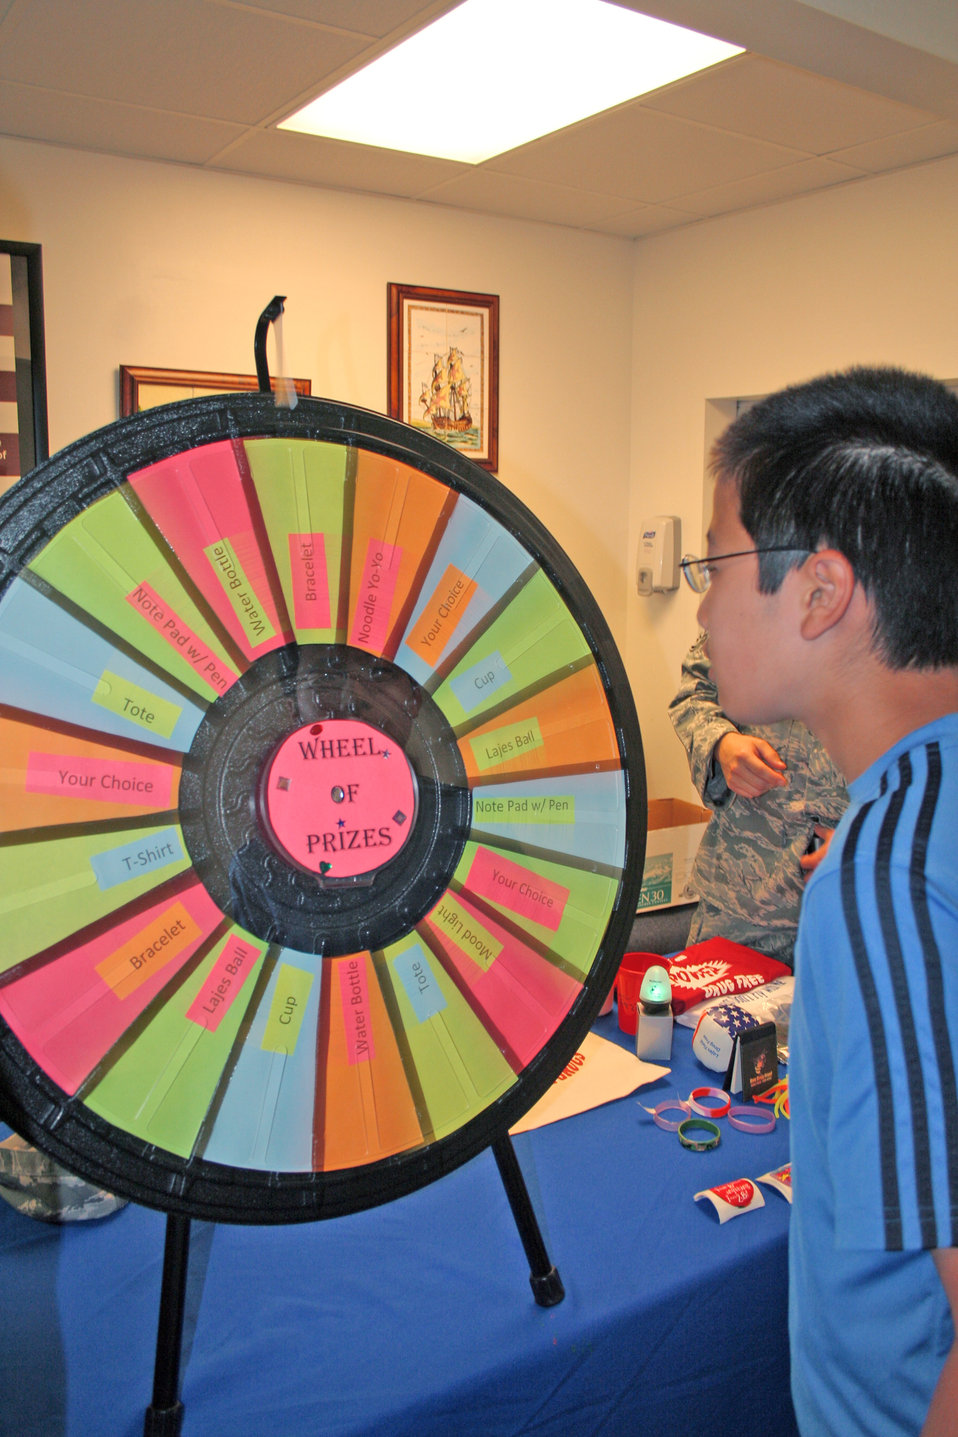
Lajes Field clinic hosts school, sports physical day

Yohei Sparks watches as the